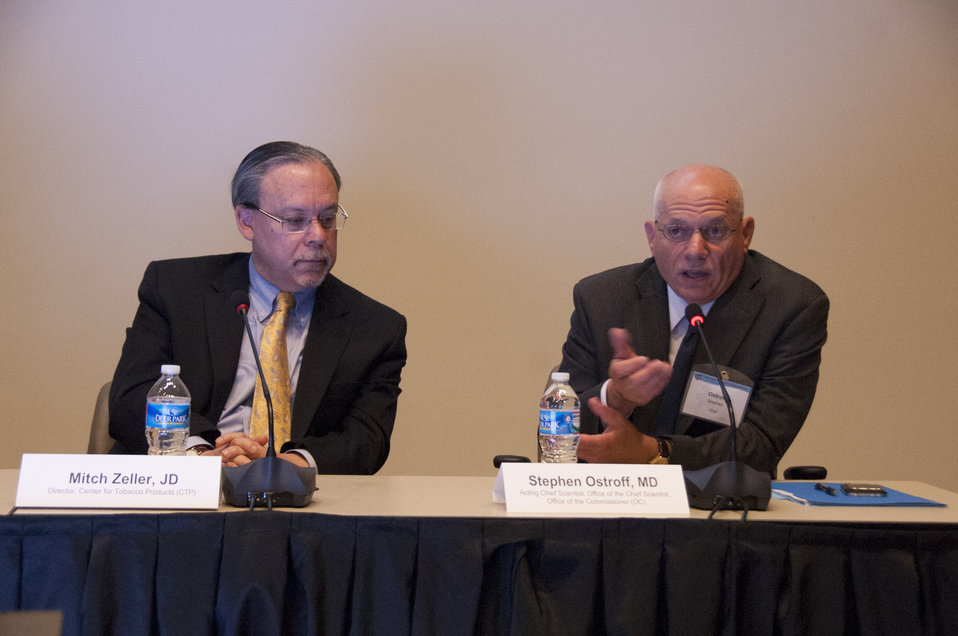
FDA's 2014 Health Professional Organizations Conference (1137)

May 14, 2014; Left: Mitch Zeller, JD, Director of FDA's Center for Tobacco Products (CTP). Right: Stephen Ostroff, MD, Acting Chief Scientist of FDA's Office of the Chief Scientist. At FDA's third annual Health Professional Organizations Conference, some of FDA’s most senior leaders exchanged views and discussed issues of mutual interest with senior representatives from key health professional organizations. To learn more, go to FDA Voice.

This photo is free of all copyright restrictions and available for use and redistribution without permission. Credit to the U.S. Food and Drug Administration is appreciated but not required.

Privacy and use information: www.flickr.com/people/fdaphotos/